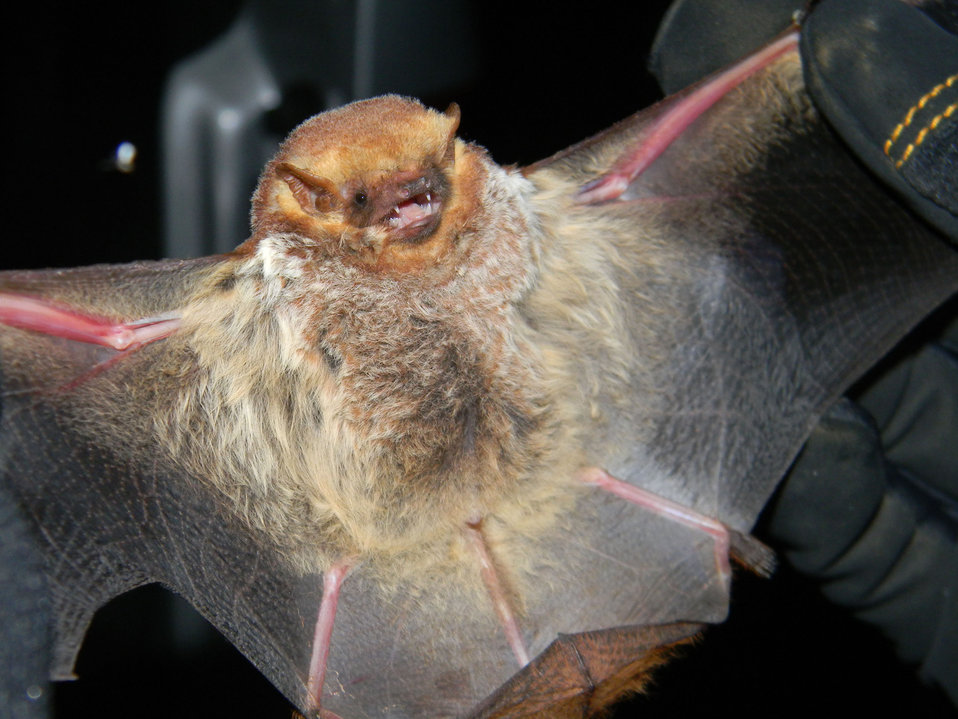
281 Seminole Bat

This Seminole Bat is a medium-sized bat caught by ecologist Gary Libby for a bat survey conducted by the U.S. Forest Service, Florida Bat Working Group, Florida Fish and Wildlife Conservation Commission and the University of Florida to test for white-nose syndrome and general bat healthiness in the Apalachicola National Forest in Florida on May 22, 2012. The Seminole Bat grows up to four and one-half inches long with a wingspan of up to 12 inches and can weigh up to one-half ounce.